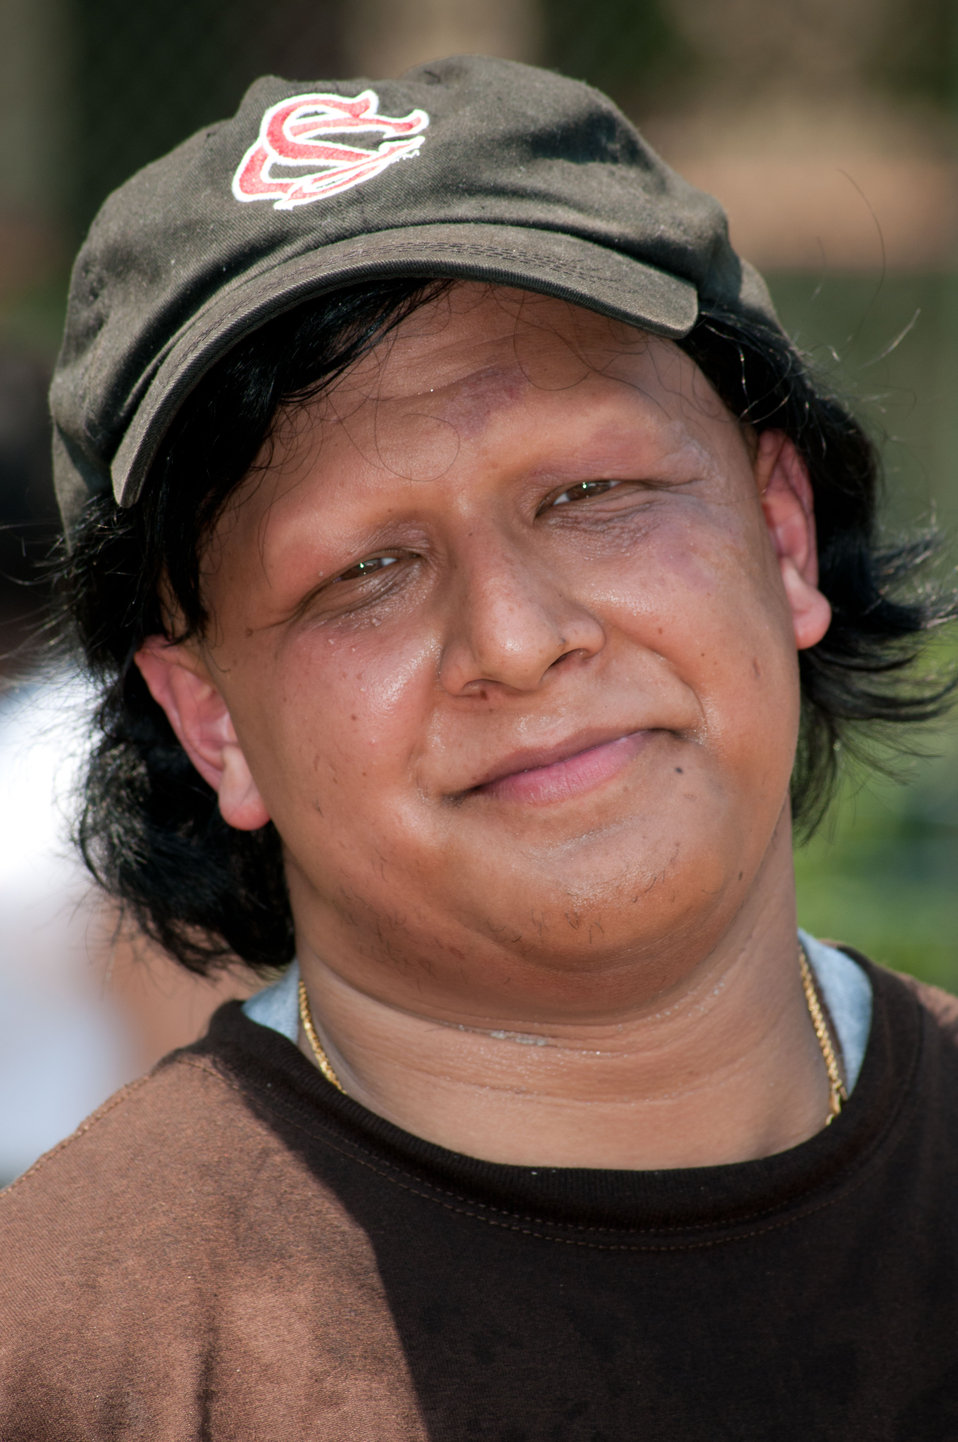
U.S. Department of Agriculture’s Paras G. Kinariwala takes a break from the heat and humidity during the creation of a People’s Garden, at William B. Powell Elementary School on Thursday, June 9, 2011 in Washington, DC. Volunteers from U.S. Department of Agriculture People’s Garden Executive Master Gardener program and Washington Capitals hockey organization, along with defenseman Jeff Schultz, and mascot Slapshot transformed a grassy corner of the school playground into a habitat garden and outdoor learning area. Executive Master Gardeners led the volunteer project teams. The Washington Capitals donated new tools; tool shed; garden materials; lunch; most of the volunteers and more. The completed projects included a walking path; tiling of garden plots; planting a bird habitat garden, pollinator garden and native grasses; caterpillar and butterfly plaques; hummingbird and bat house, and tool shed. The garden will later include a picnic area, outdoor classroom, hummingbird garden, Monarch watch garden, native bee garden, and birdbath. USDA challenges its employees to establish People's Gardens at USDA facilities worldwide or on this case, help communities create gardens. People's Gardens vary in size and type, but all have a common purpose - to help the community and the environment.